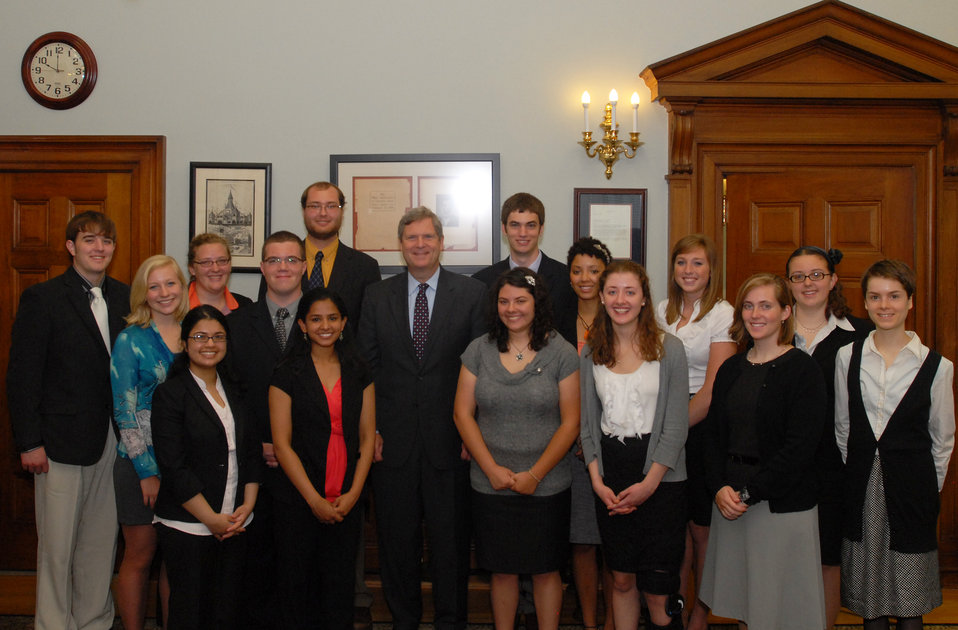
Agriculture Secretary Tom Vilsack speaks with Wallace-Carver interns at the U.S. Department of Agriculture in Washington, DC, on Monday, June 20, 2011.